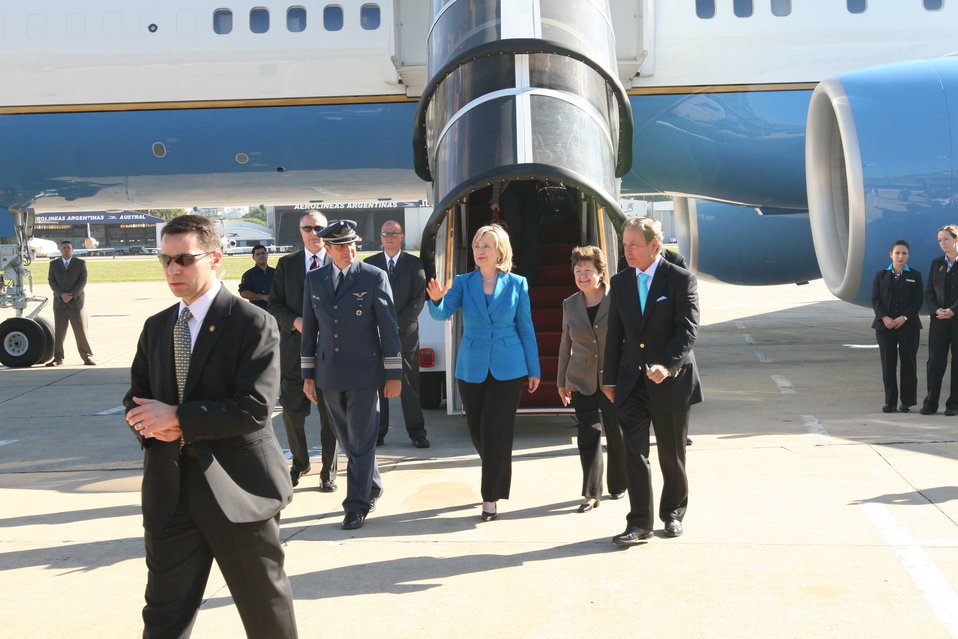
Secretary Clinton Wheels Down in Buenos Aires, Argentina

U.S. Secretary of State Hillary Rodham Clinton 'wheels down' in Buenos Aires, Argentina March 1, 2010.